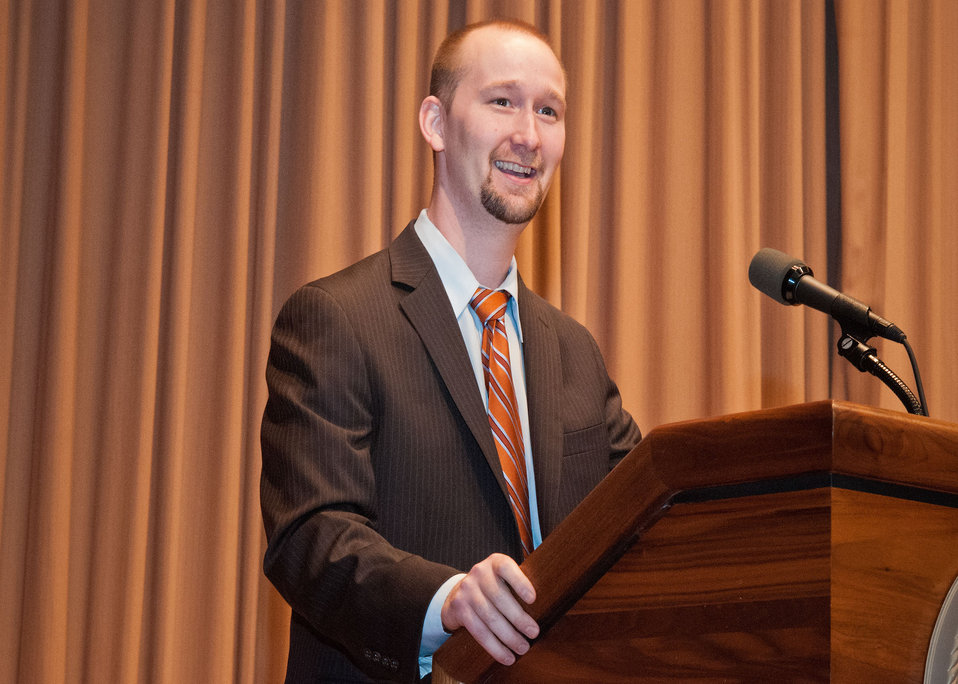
Office of Personnel Management representative Michael Murray gives the closing remarks at the U.S. Department of Agriculture's 2012 National Disability Employment Awareness Month celebration in Washington, D.C. on Wednesday, Oct. 17, 2012. The theme for the event was, “A Strong Workforce is an Inclusive Workforce: What Can You Do? Murray's mantra for his remarks was (Disability = Diversity) (Inclusion) = Innovation.